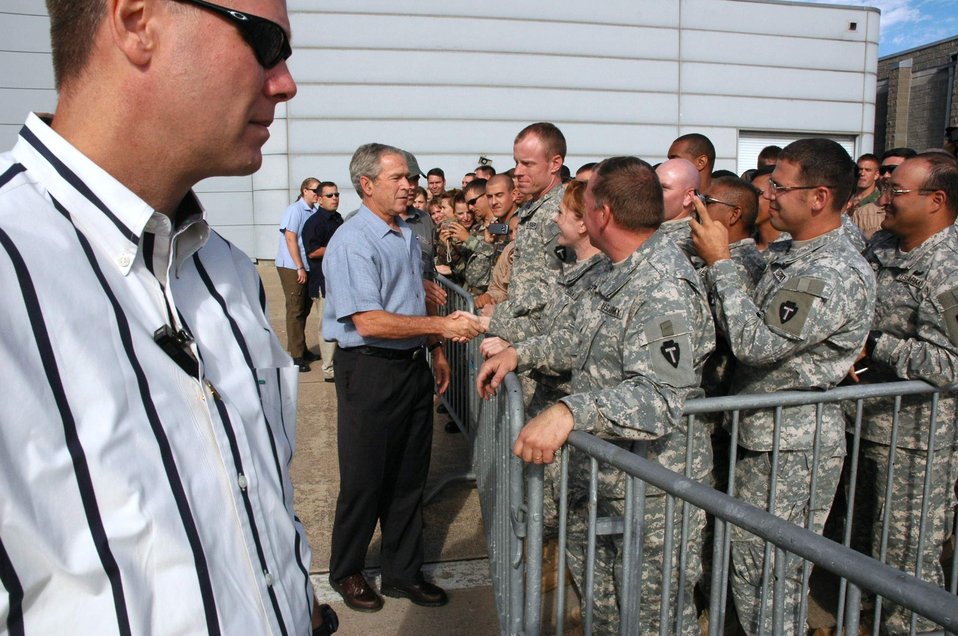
President Bush greets servicemembers supporting Ike relief

President George W. Bush shakes hands with military members Sept. 16 at Ellington Field, Texas, before assessing the damage from Hurricane Ike from the Marine 1 helicopter around the Gulf Coast. Active duty, Reserve and Guard servicemembers are assisting with the relief effort after the storm ravaged the region.